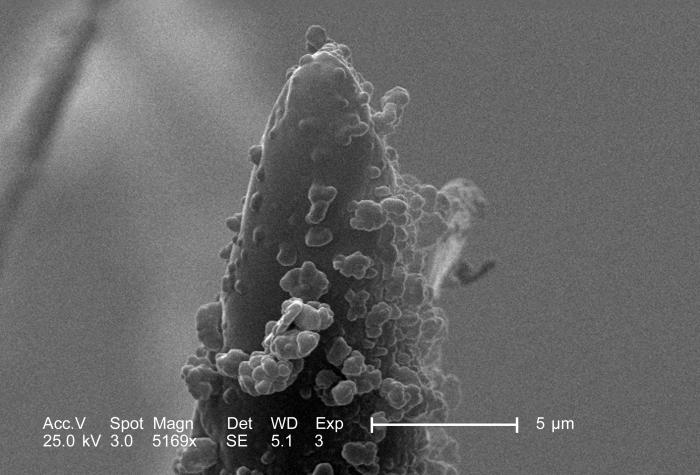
Under a high magnification of 5169x, this scanning electron micrograph (SEM) depicted some of the ultrastructural morphologic details seen at the distal tip of the stinger apparatus of an unidentified hymenopteran insect found deceased in the Decatur, Georgia suburbs. The Order of Hymenoptera includes bees, wasps, ants, and sawflies. At a lower magnification of 646x (PHIL #8251), this stinger looked relatively smooth upon its surface. However, at this much higher magnification, many of the microscopic protuberances that festoon the chitinous exoskeletal stinger shaft, can be seen as being part of the exoskeleton, while some are merely particulates picked up from the environment. These bumps are extremely small, and do not preclude the wasp from easily extracting the stinger from its victim after having introduced its dose of venom into the skin.